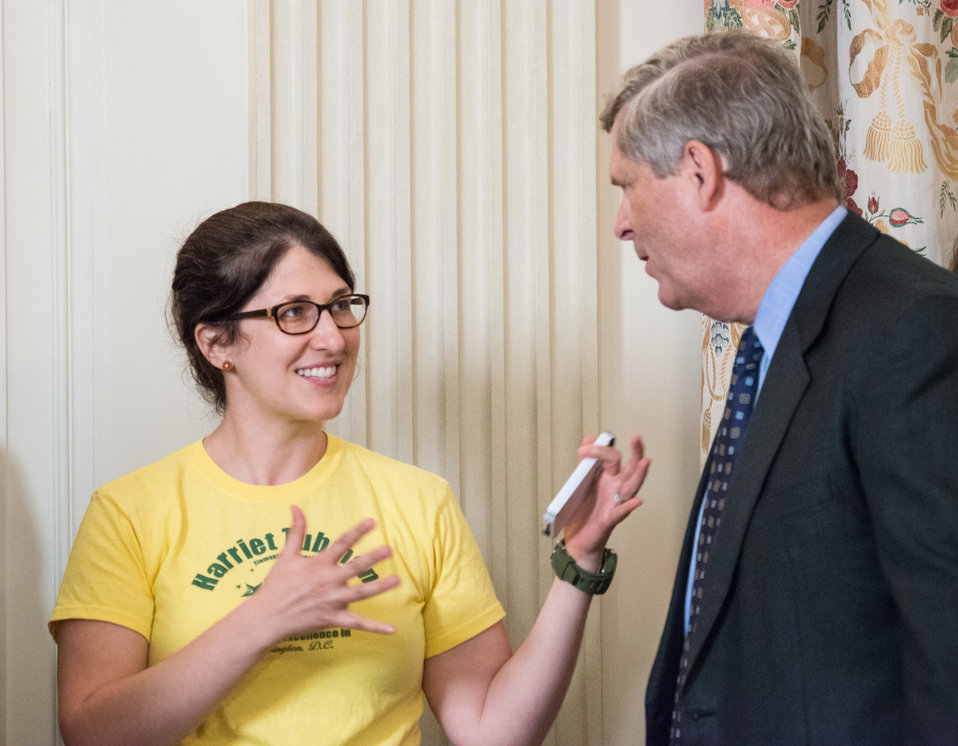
Agriculture Secretary Tom Vilsack speaks to Washington, D.C. staff person from Harriet Tubman Elementary School, who helped plant the White House Kitchen garden in the spring in the State Dining Room of the White House in Washington, D.C. on Thursday, Jun. 12, 2014. The school made lunch from this year’s summer crop with the help of White House chefs and visiting school nutrition directors from Orlando, FL, Dallas, TX, and West Virginia USDA photo by Lance Cheung.